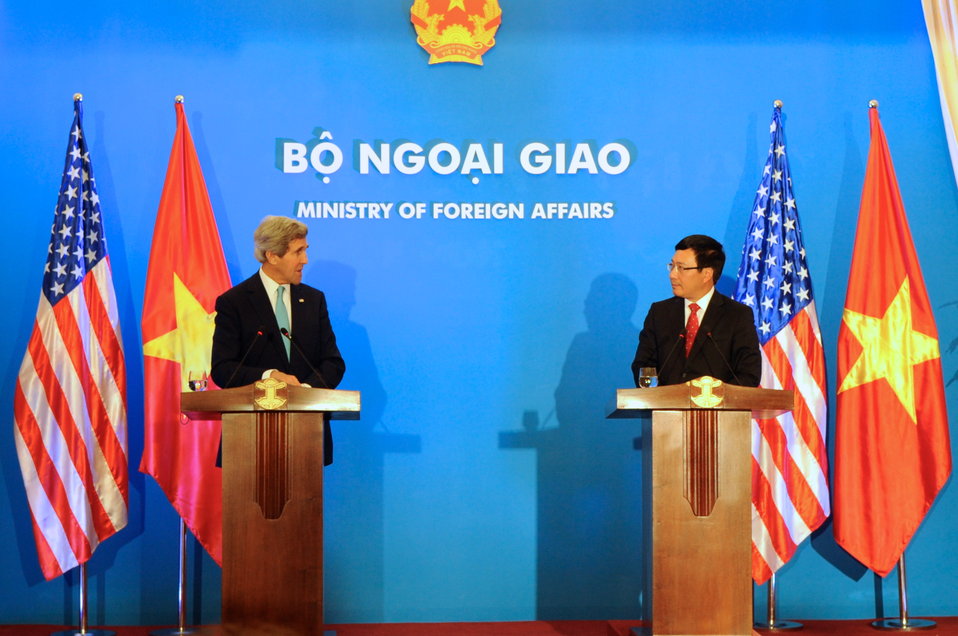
Secretary Kerry Holds a News Conference With Vietnamese Foreign Minister Minh

U.S. Secretary of State John Kerry speaks during a joint news conference with Vietnamese Foreign Minister Pham Binh Minh in Hanoi, Vietnam, on December 16, 2013.